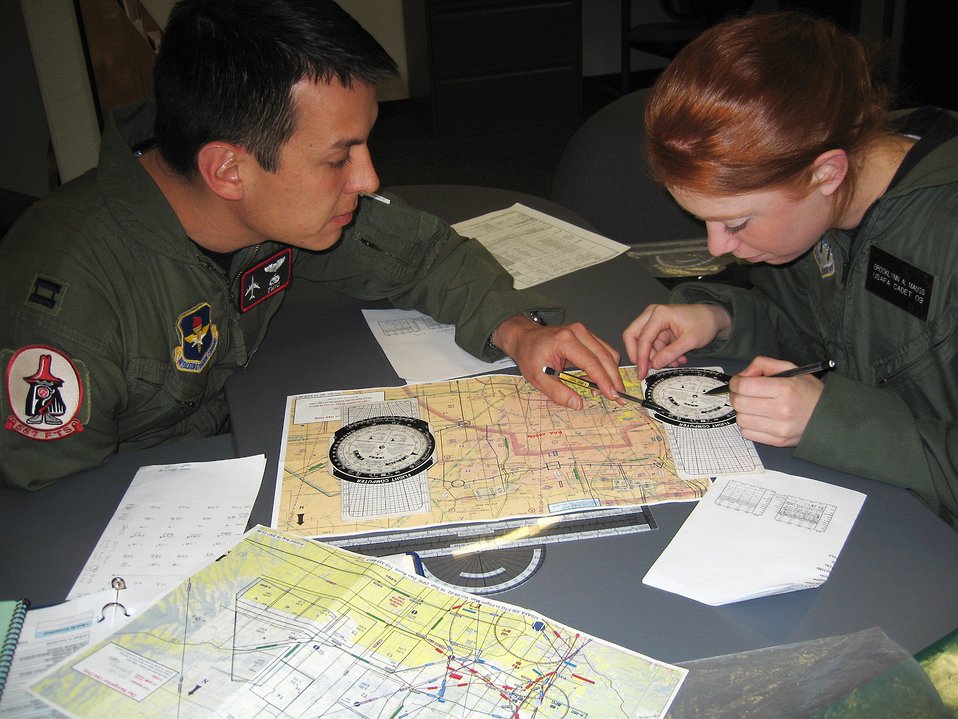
Powered flight returns to Air Force Academy

Capt. Steve Priddy and Cadet 2nd Class Brooke Mauss prepare for a flight Feb. 1 at the U.S. Air Force Academy. Captain Priddy is an instructor pilot with the 557th Flying Training Squadron and Cadet Mauss is a member of Cadet Squadron 5 participating in the